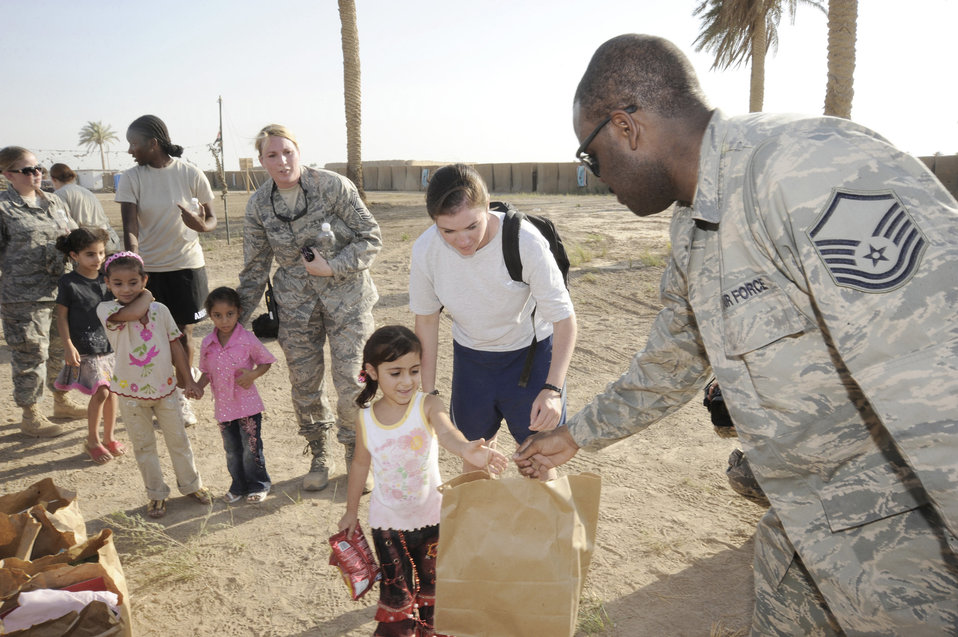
Airmen build ties with Iraqi families

Master Sgt. Shantell Frierson hands an Iraqi child a bag of treats July 24 in Baghdad. Forty-five Airmen and Soldiers volunteered to visit and distribute donated items to local Iraqi families as part of the Sather Air Base Good Neighbor Program. Sergeant Frierson is a Multinational Corps Iraq Joint Crew Composite Squadron automated data processing technician. Sergeant Frierson is deployed from Ramstein Air Base, Germany, and is a native of Coward, S.C.